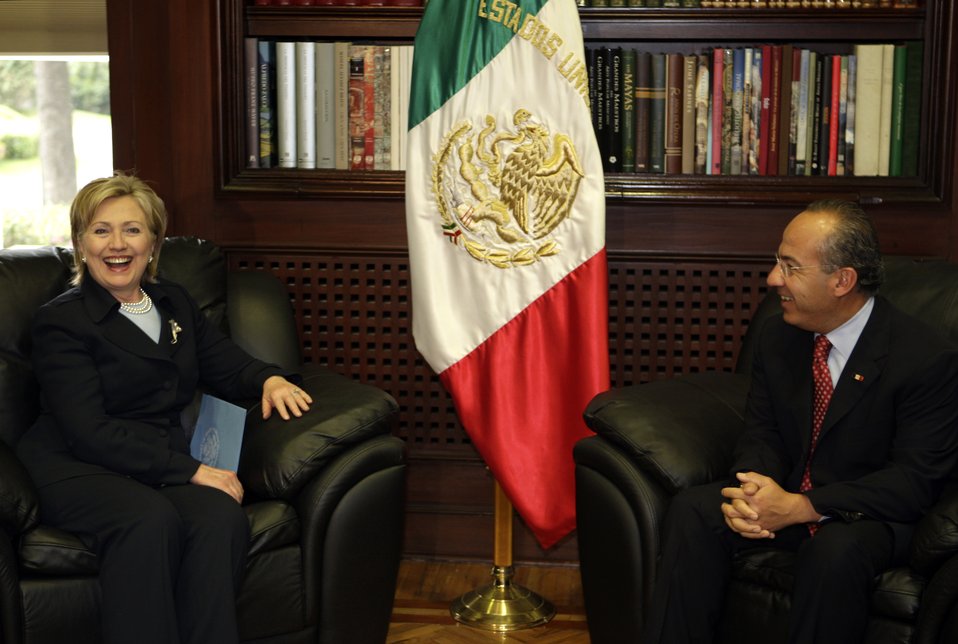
Secretary Clinton Meets Mexican President

Mexican President Felipe Calderon meets with U.S. Secretary of State Hillary Clinton inside Los Pinos presidential residence in Mexico City, March 25, 2009. Clinton is in Mexico for a two-day visit.